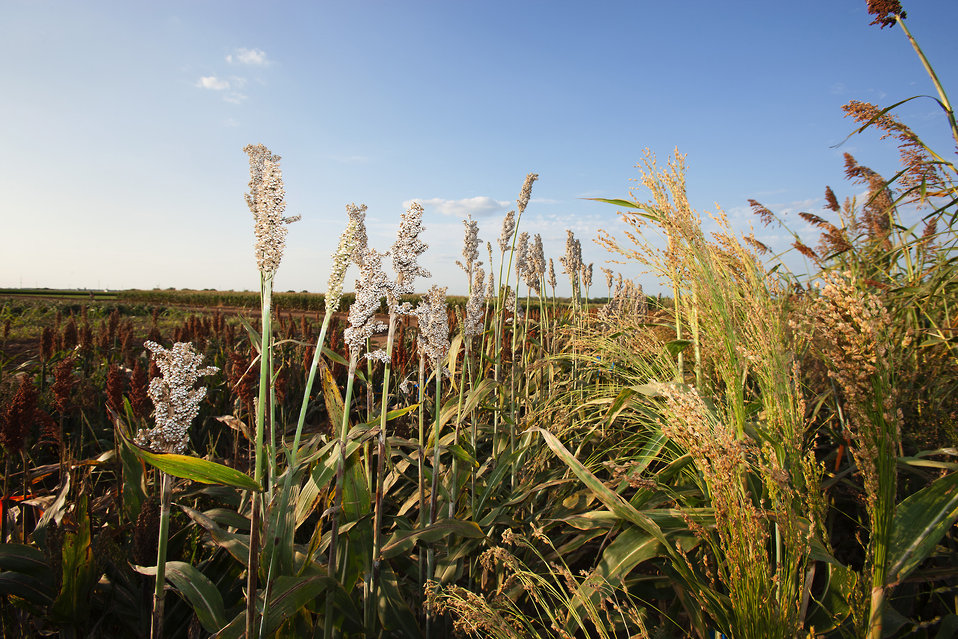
Sorghum lines at College Station, TX are being evaluated for anthracnose resistance on Dec. 6, 2002.